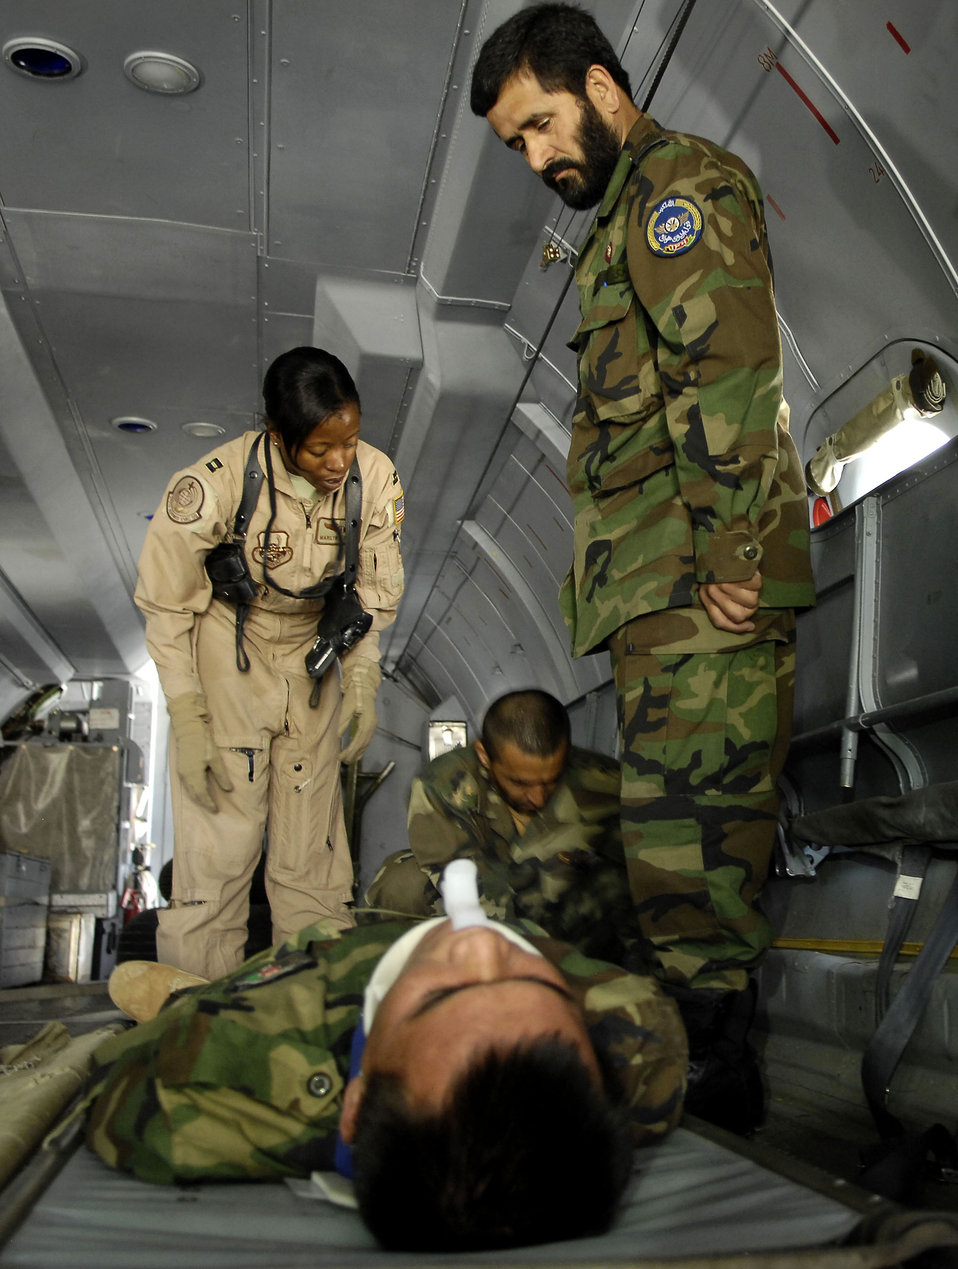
Airmen help Afghans stand up flight medicine clinic

Capt. Marilyn Thomas observes a medical evacuation team as they floor load a patient onto an AN-32 cargo plane during an Oct. 20 training exercise held at Kabul International Airport, Afghanistan. Captain Thomas is a flight nurse and an Afghan national army air corps medical mentor with the air corps advisers group. She is deployed from Scott Air Force Base, Ill.